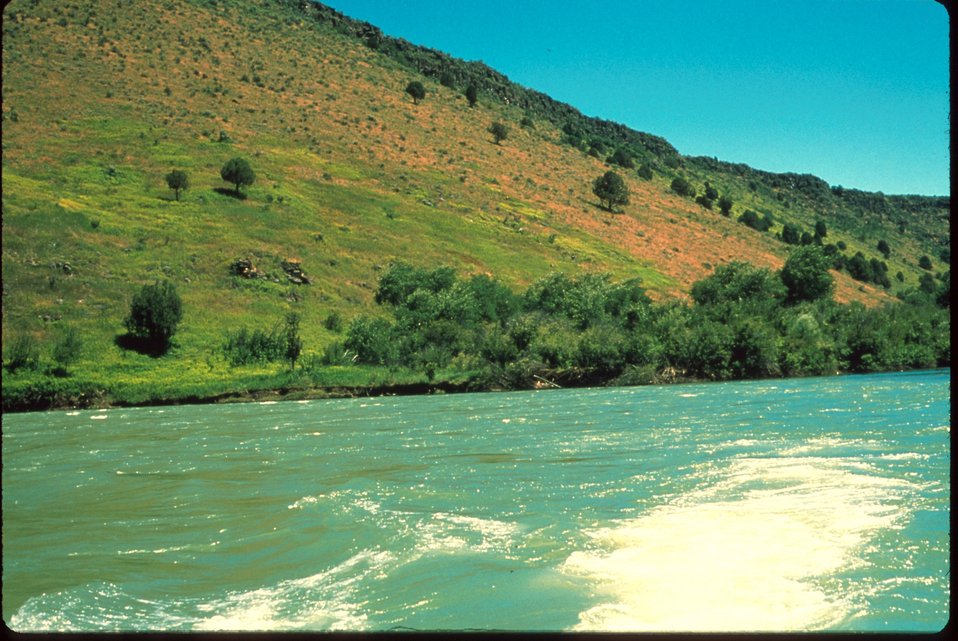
Leafy Spurge on the South Fork of the Snake River Idaho Falls Field Office Idaho vegetation Plants in BLM USRD Upper Snake River District